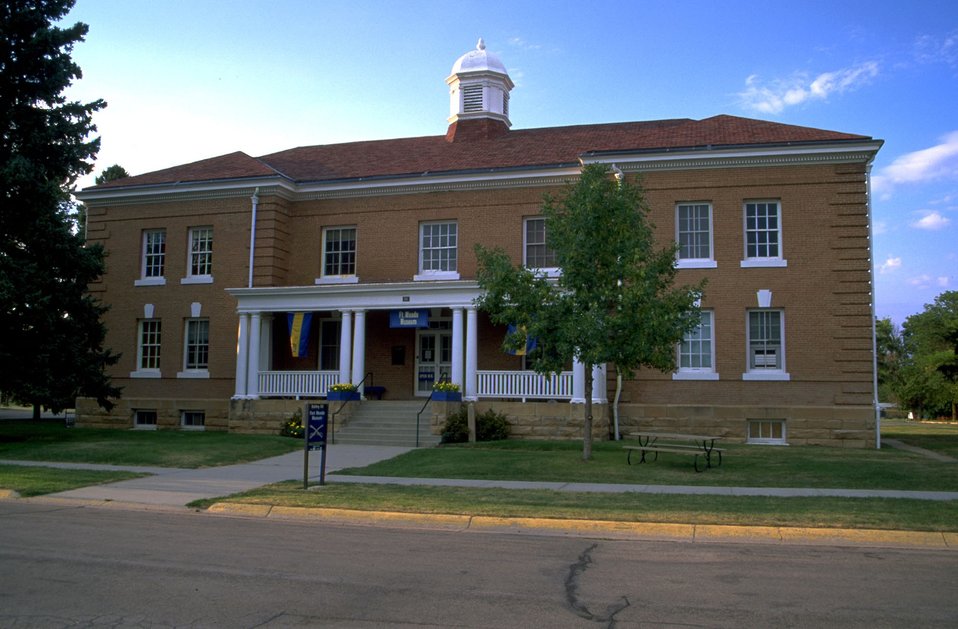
Old Fort building which is now a Museum